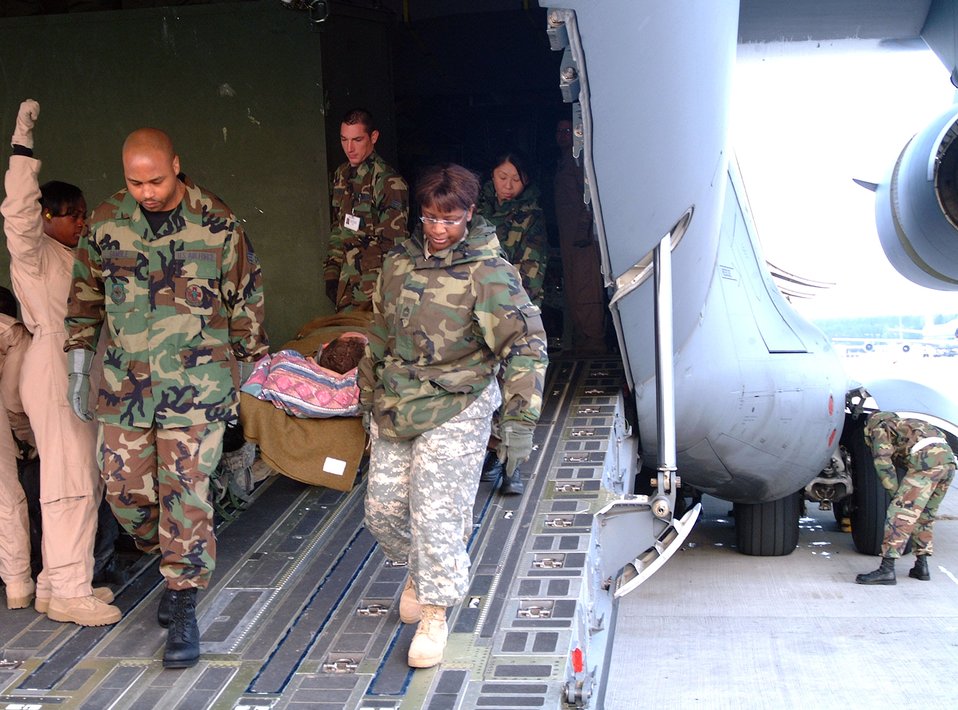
Medics make air evacuation easier on wounded troops

A contingency air staging facility medical team carries a wounded servicemember off a C-17 Globemaster III at Ramstein Air Base, Germany, after a recent flight from Balad Air Base, Iraq. Medics then transport patients to nearby Landstuhl Regional Medical Center for further treatment and recovery.